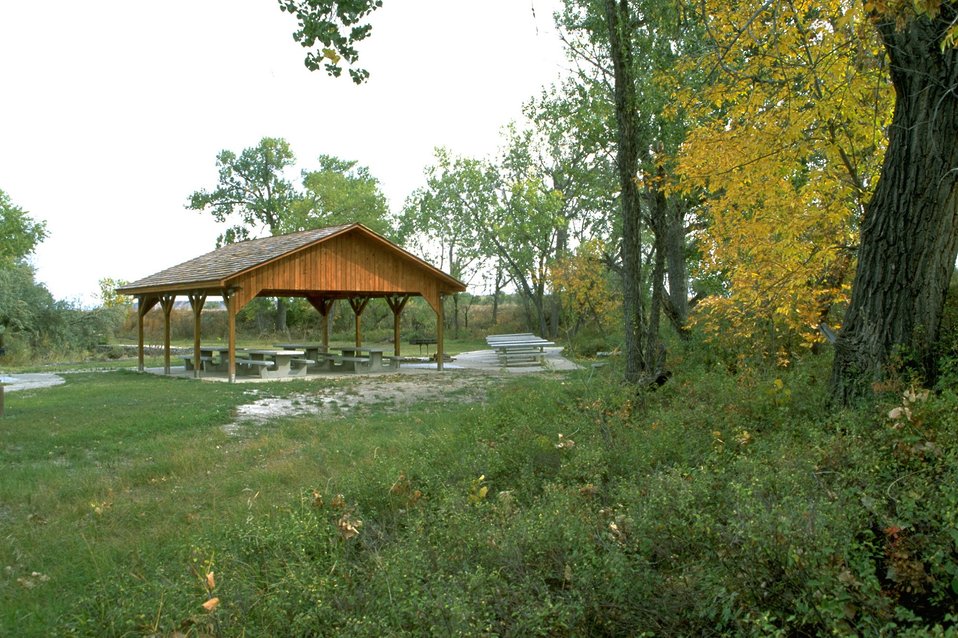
Group picnic shelter at Matthews Recreation Site